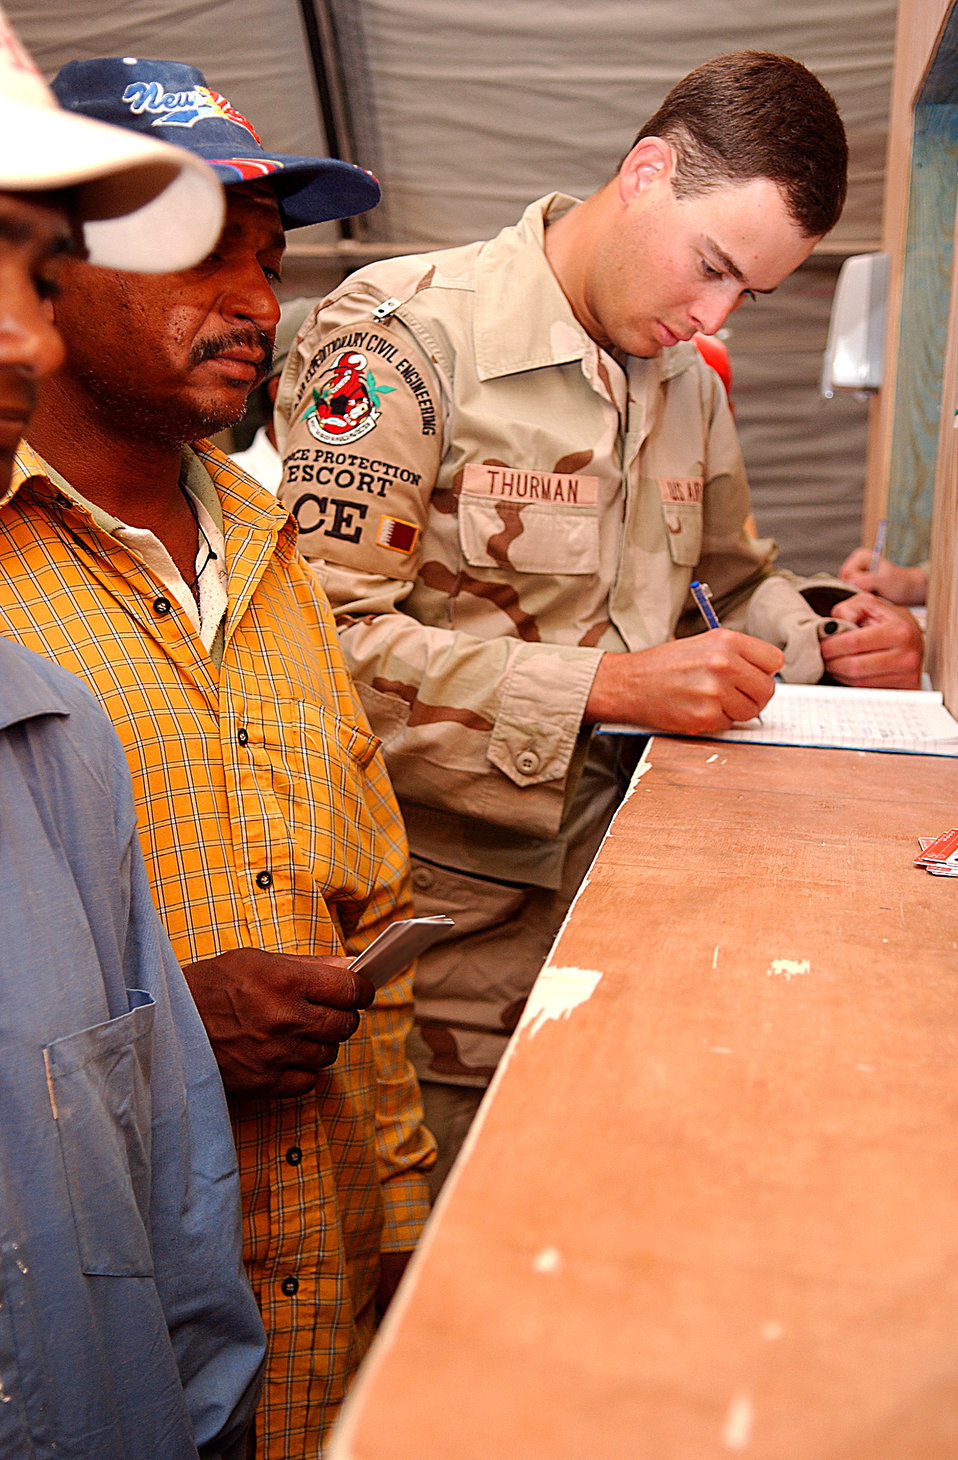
Escorts serve as base's second line of defense

SOUTHWEST ASIA -- Airman 1st Class Matthew Thurman completes paperwork that will give several foreign workers restricted access to the base. He is a 379th Expeditionary Civil Engineer Squadron escort.